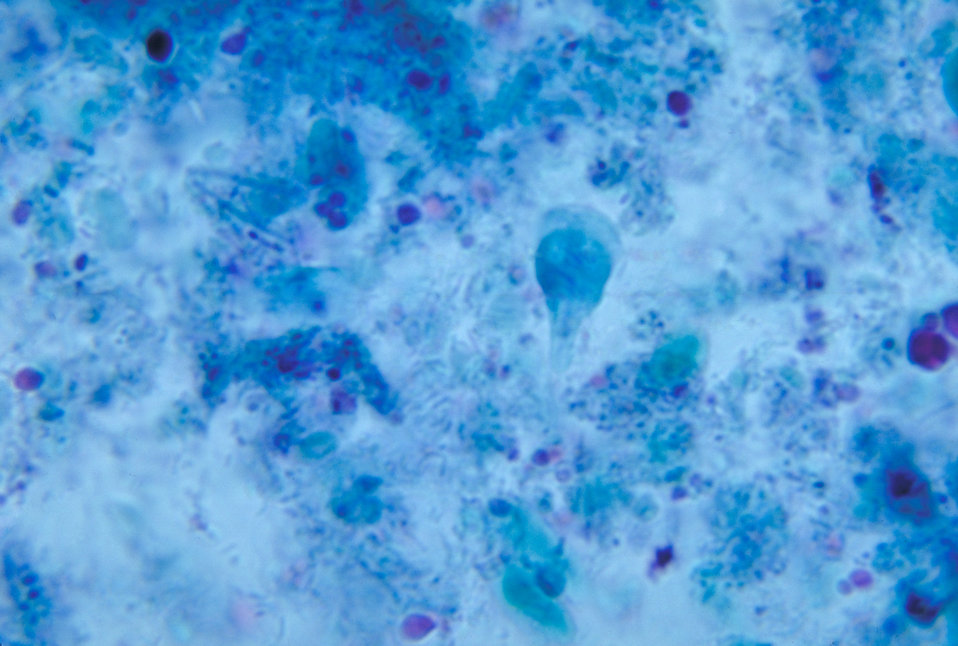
Giardia lamblia trophozoite. Trichrome stain. Parasite.